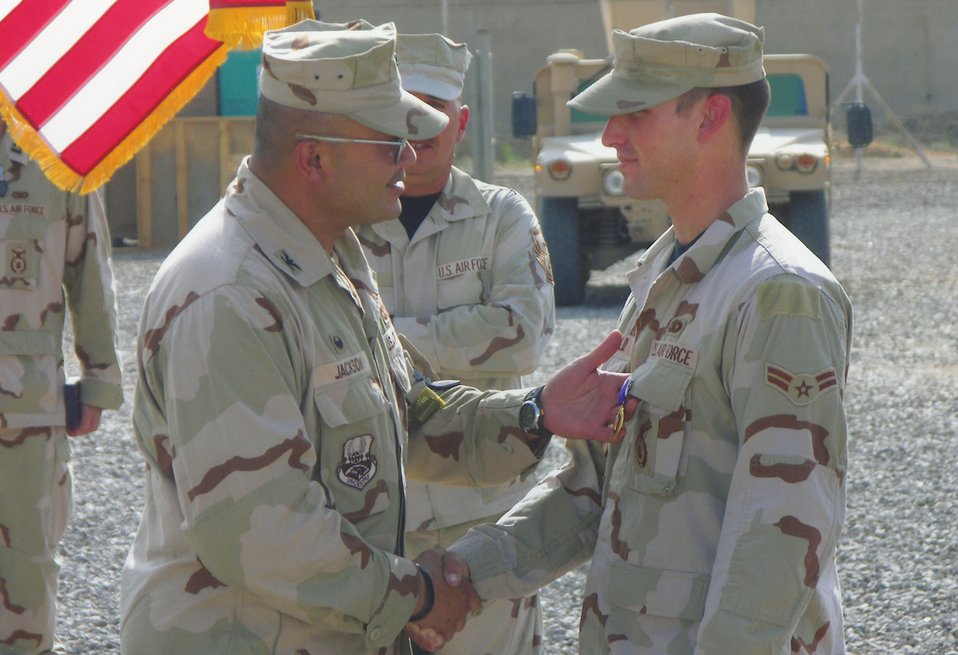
Moody Airman receives Purple Heart, learns value of wingman support

Then, Airman 1st Class Jeremy Birchfield is presented the Purple Heart in a ceremony at Camp Victory, Iraq Sept. 24, 2006. The 824th Security Forces Squadron turret gunner was hit by a sniper during patrol operations Sept. 22, 2006. He is the first Airman from the 824th SFS to receive the medal.